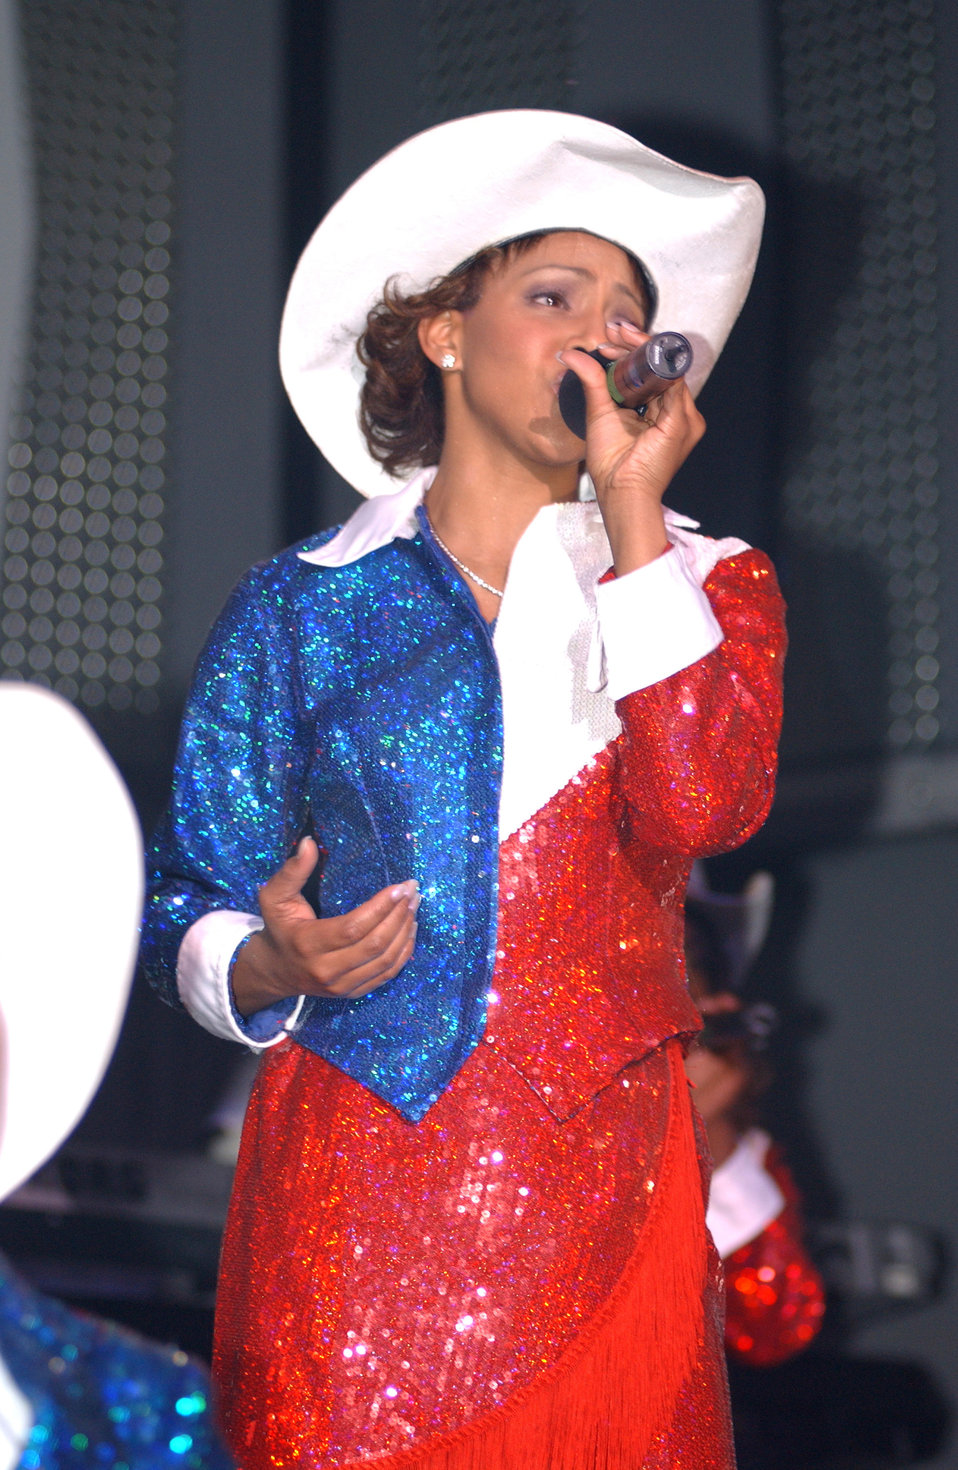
Tops in Blue

ELMENDORF AIR FORCE BASE, Alaska -- Staff Sgt. Kristina Robinson performs during the